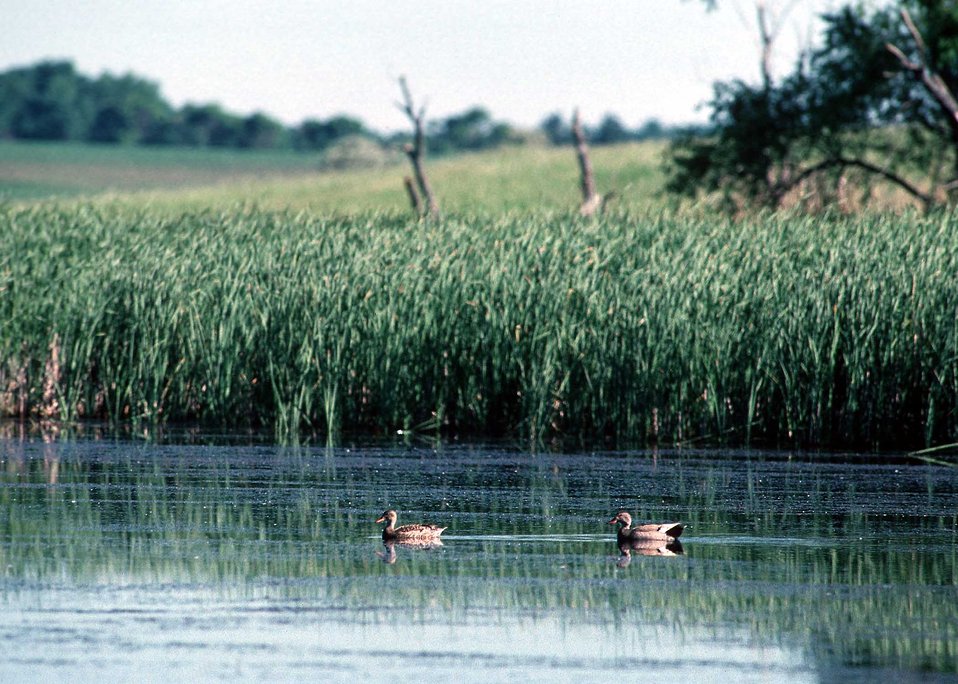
Mallard ducks rest on a prarie pothole.